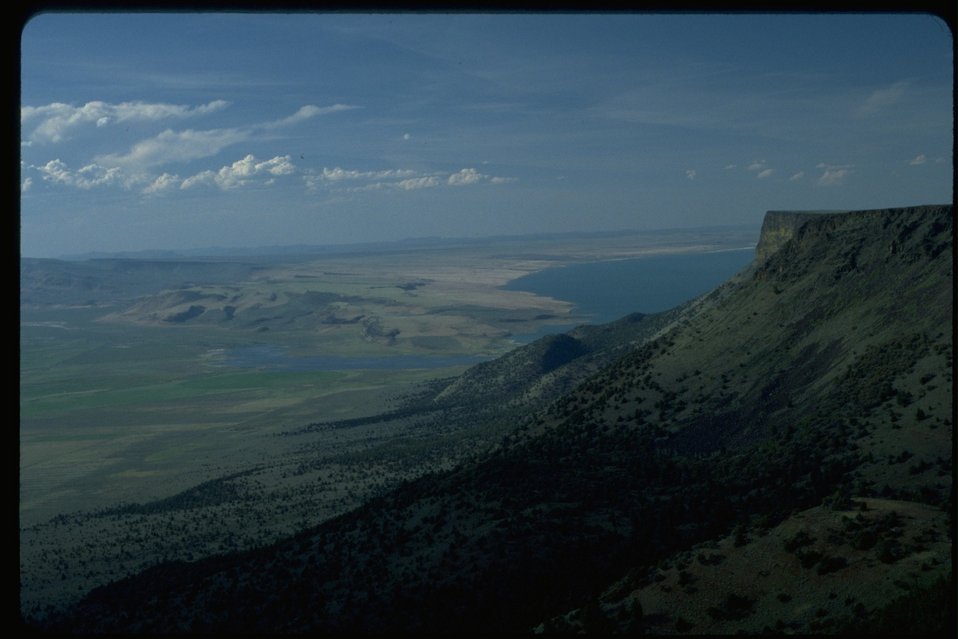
Abert Rim.